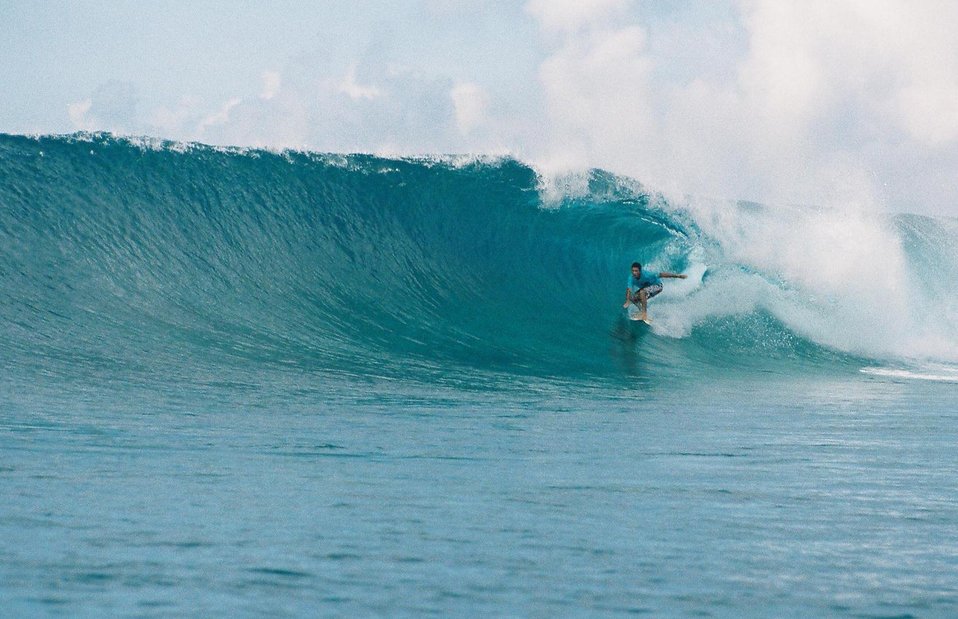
self shot